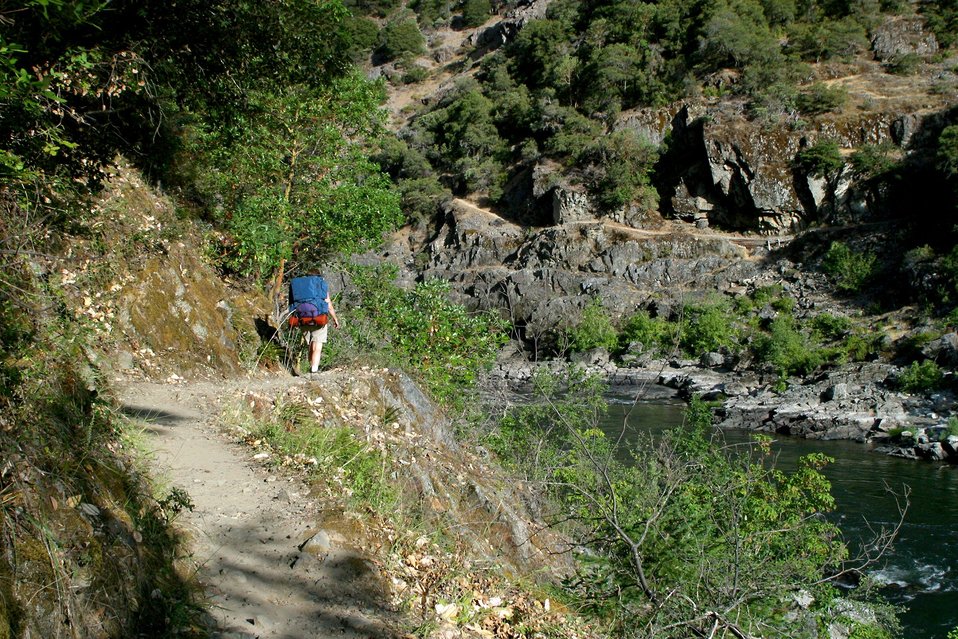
Hiking Rainie Falls Trail between Grave Creek and Rainie Falls.